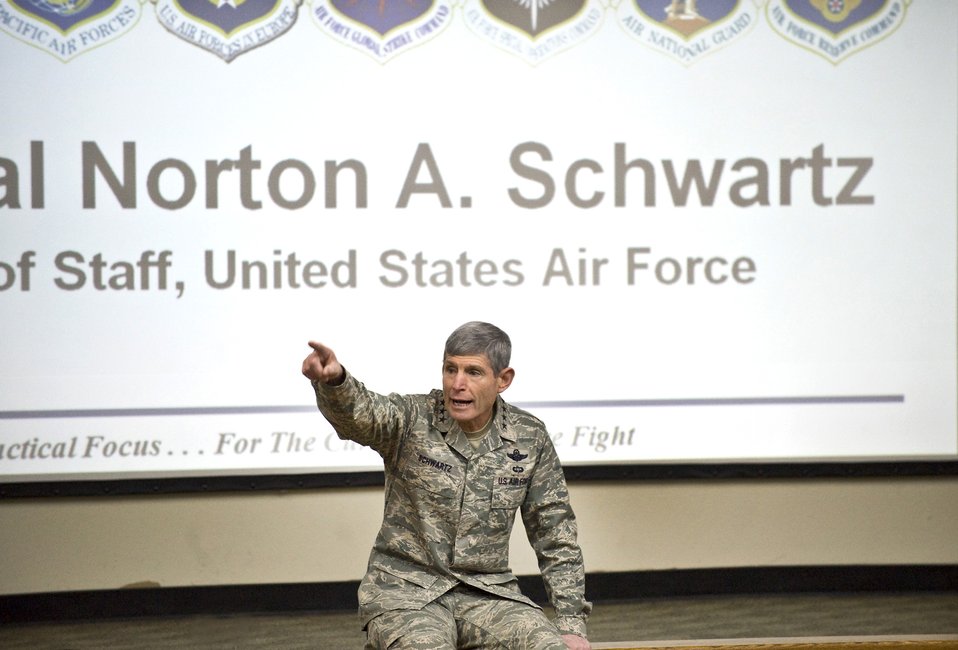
CSAF delivers keynote address at Weapons and Tactics Conference

Air Force Chief of Staff Gen. Norton Schwartz conducts a question and answer session following his opening remarks at the Combat Air Forces Weapons and Tactics Conference Jan 10, 2011, at Nellis Air Force Base, Nev. WEPTAC is an annual event that brings together hundreds of war fighters to discuss current issues, to look at future issues and to provide solutions for joint employment of forces.